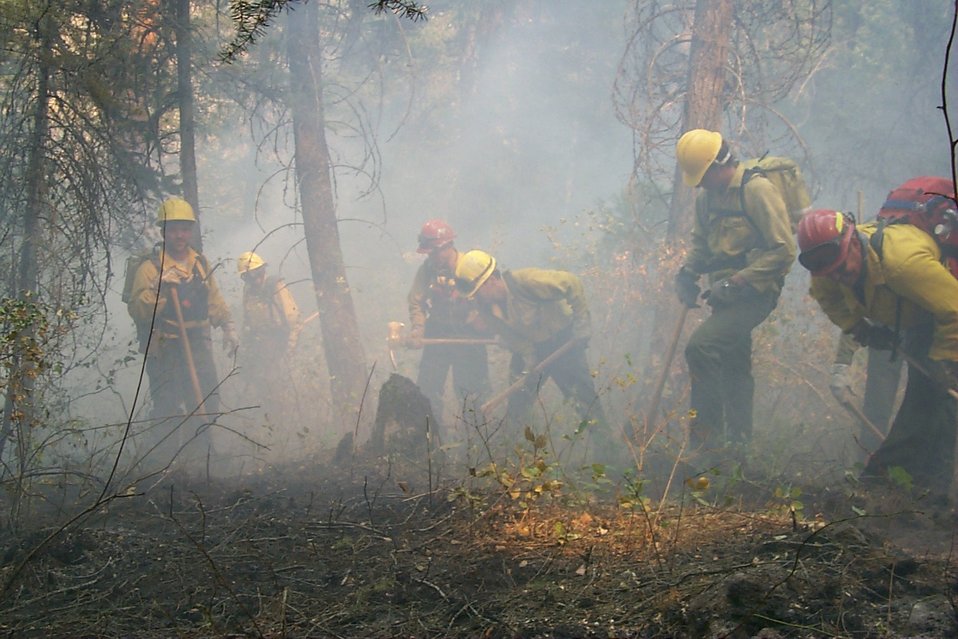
Line crew Fire Clearwater Fire Salmon Field Office USRD Upper Snake River District